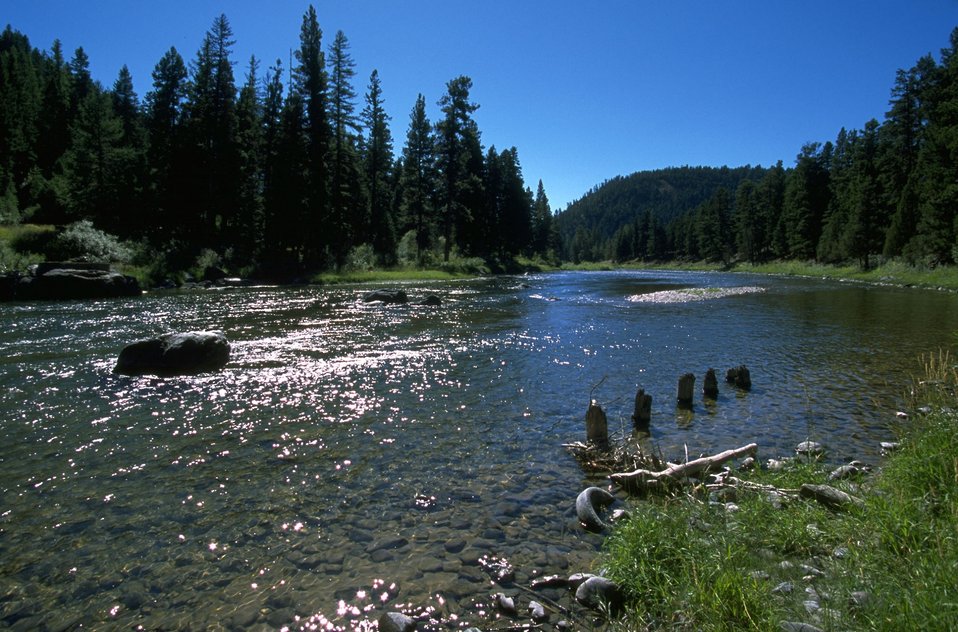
Scenic shot of Blackfoot River